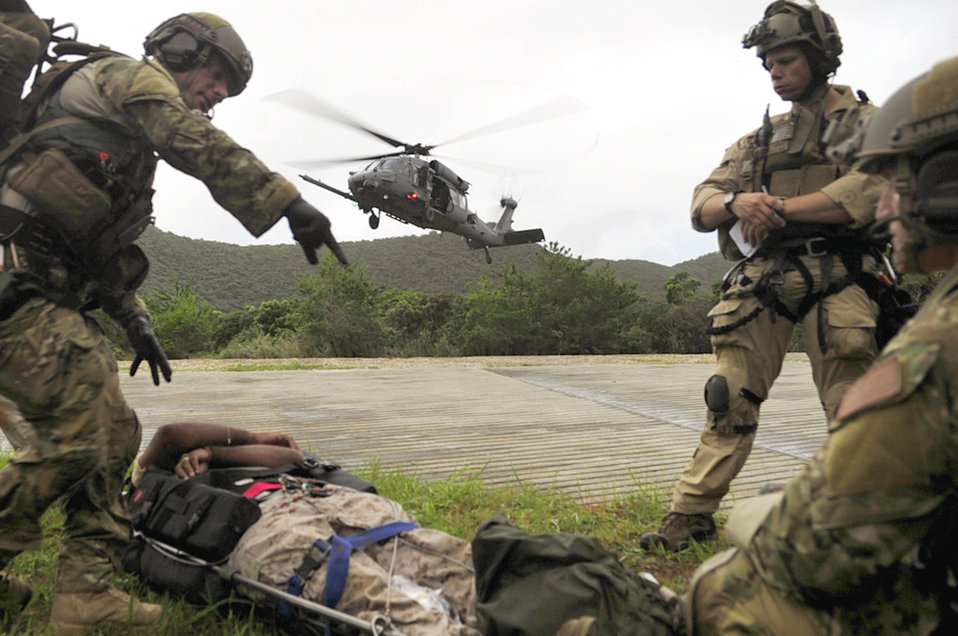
Airmen learn essential skills during joint combat training exercise

Senior Airman Andrew Nichols (from left) coordinates litter transport with Tech Sgt. Kristopher Burridge and Capt. Timothy James, July 28, 2010, during a joint simulated training exercise at Kadena Air Base, Japan. Airmen and Marines worked together to broaden their ability to treat and transport injured servicemembers safely out of the battlefield.